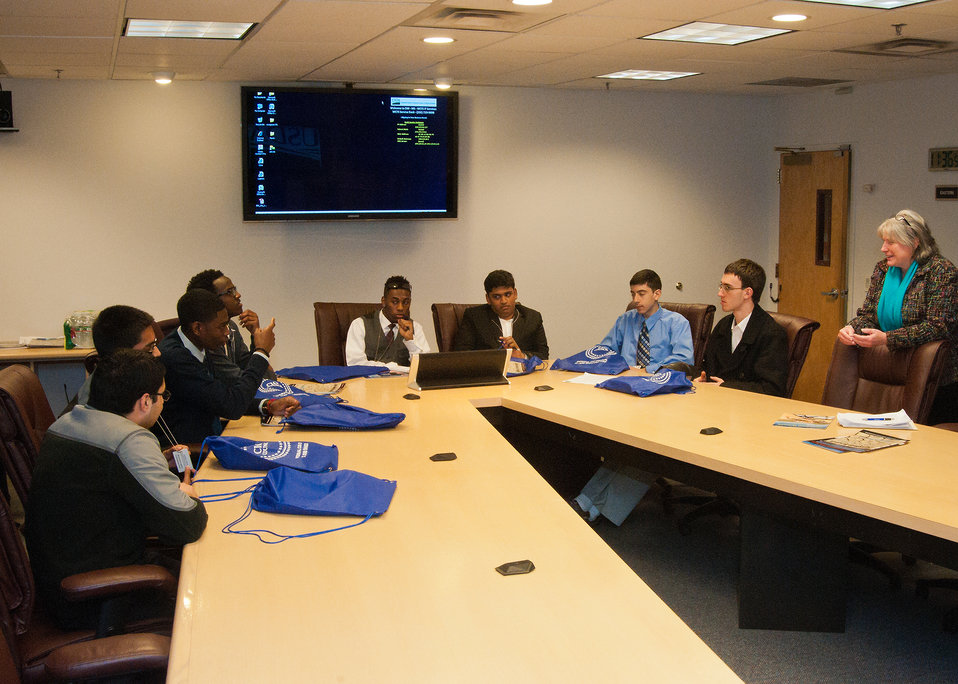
Fairfax Public Schools, Fairfax, VA Career Experience Specialist Genie Williford questions students from Edison Academy in Fairfax, VA about what they learned and what impressed the students the most about the information technology services the U.S. Department of Agriculture’s (USDA) Information Technology (IT) Job Shadow Day held by the USDA Office of the Chief Information Officer (OCIO) to introduce local high school students to careers in information technology in Washington, D.C. on Tuesday, Apr. 2, 2013.